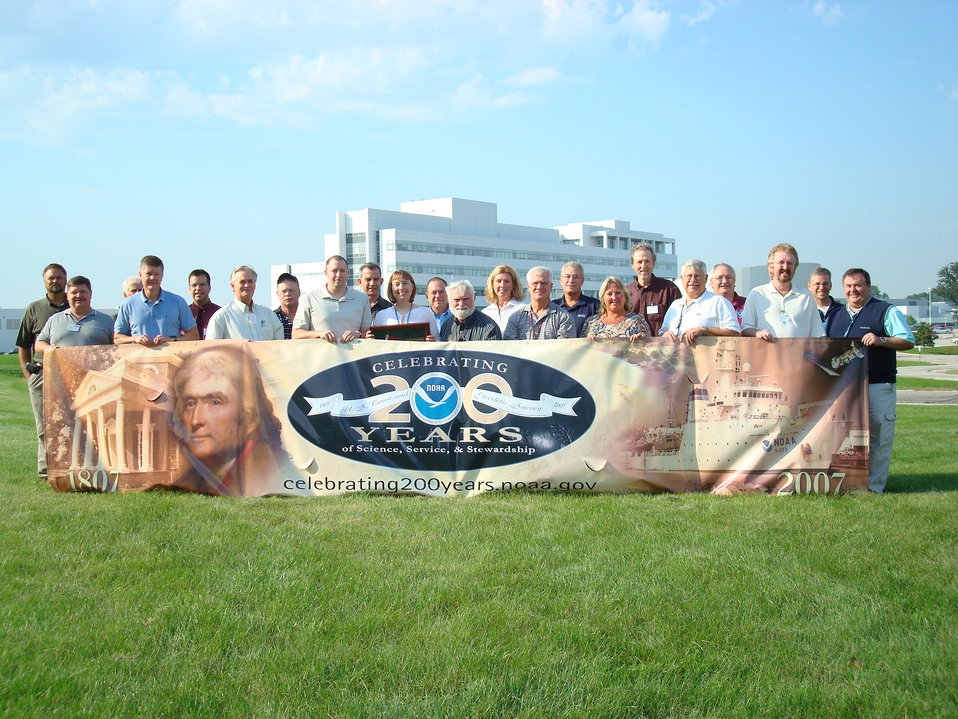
Greetings from Chicago! The Nation's Port Meteorological Officers gathered at the Argonne National Laboratory to discuss the state of the U.S. Voluntary Observing Ship Project and commemorate NOAA's 200th Celebration. NWS Cline Award recipient Amy Seeley is pictured in left center with plaque.